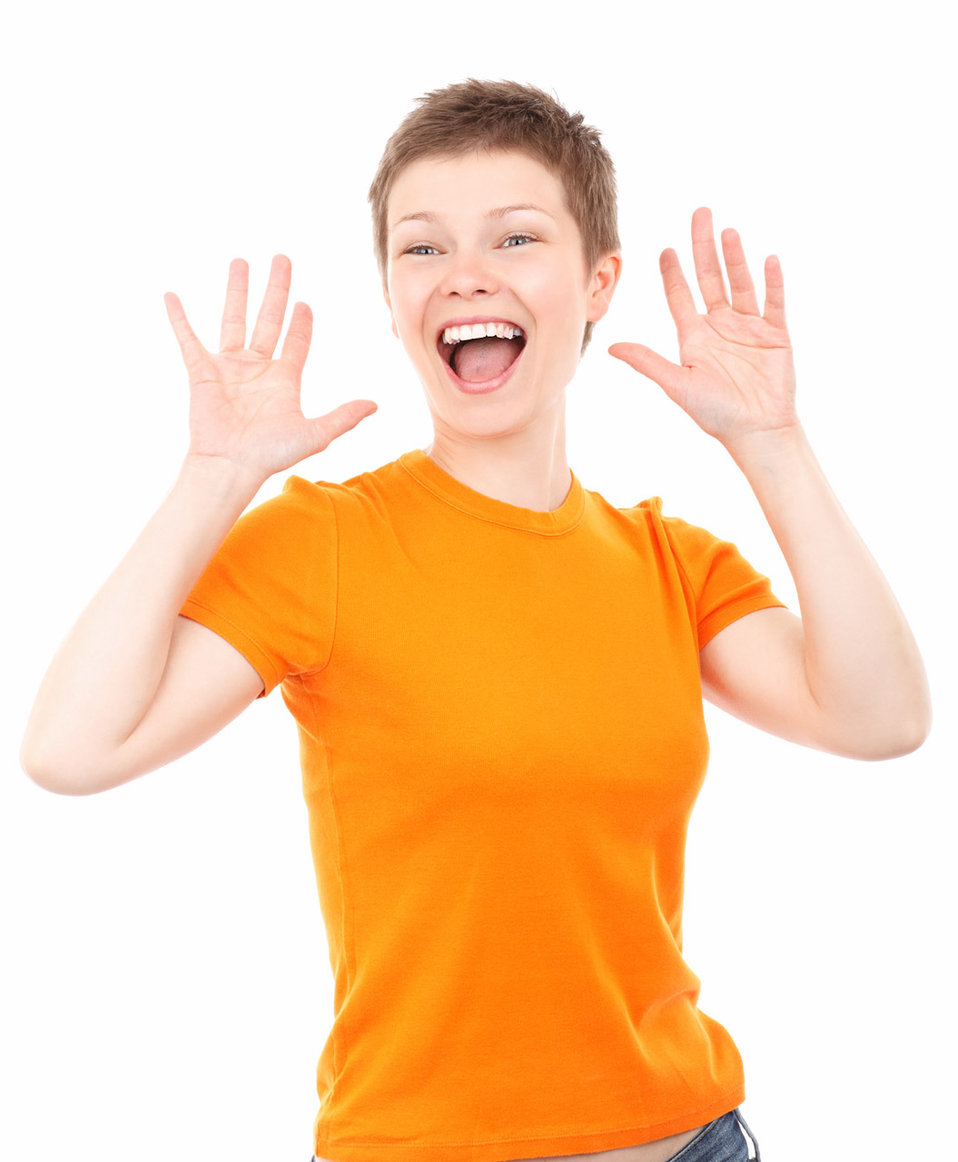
Cheerful woman

Very happy young woman isolated on white background - jana svojsova.